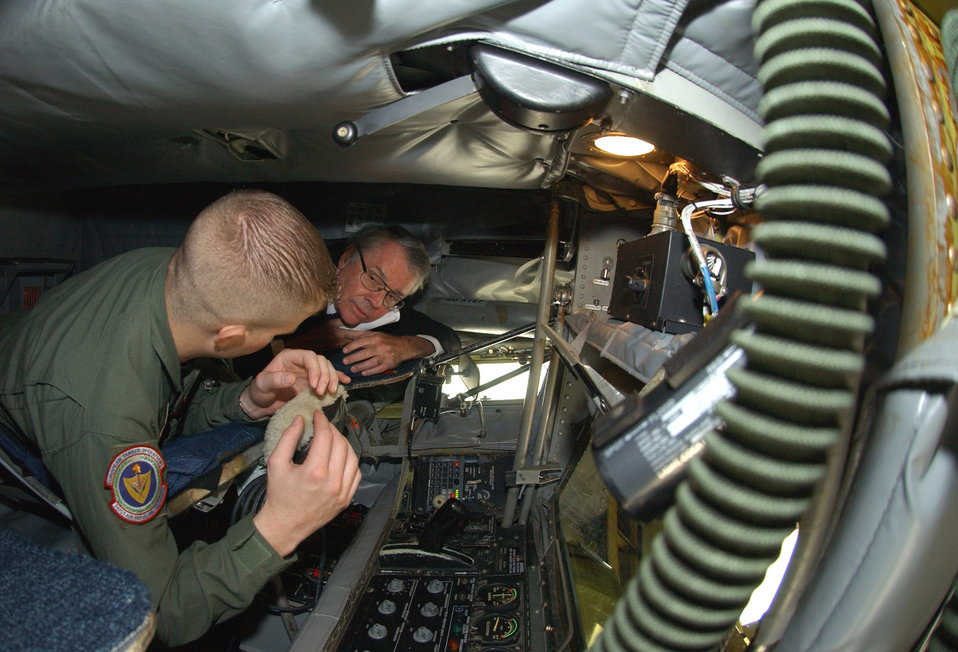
Ambassador

ROYAL AIR FORCE MILDENHALL, England -- American Ambassador to the United Kingdom Bob Tuttle receives a briefing on boom operations for the KC-135 Stratotanker by Senior Airman Luke Mailander here Aug. 9. Airman Mailander is a assigned to the 100th Air Refueling Wing.